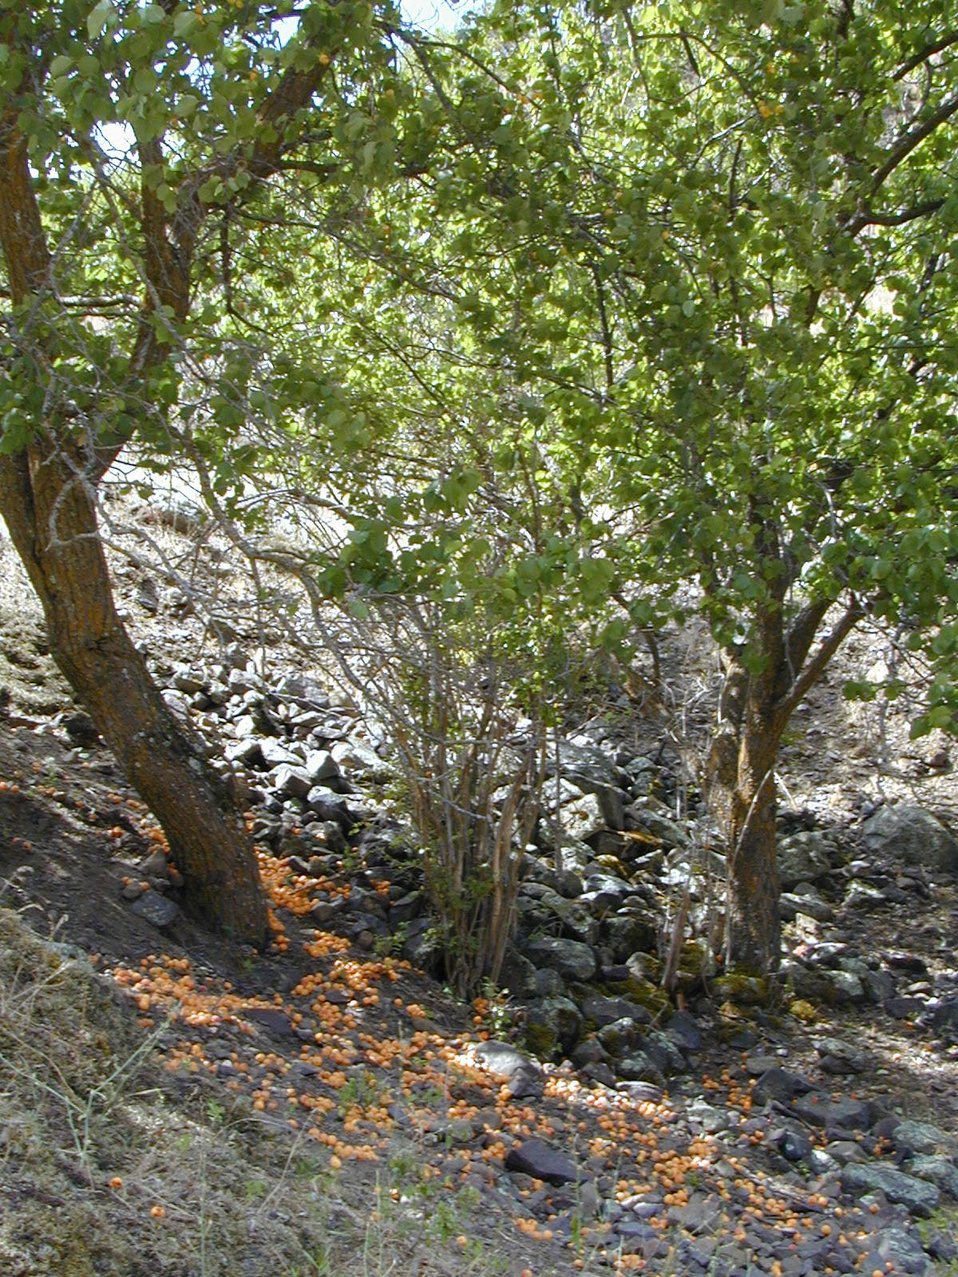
Apricot Trees Lower Salmon River Cottonwood Field Office UCSC Upper Columbia Salmon Clearwater Districtr